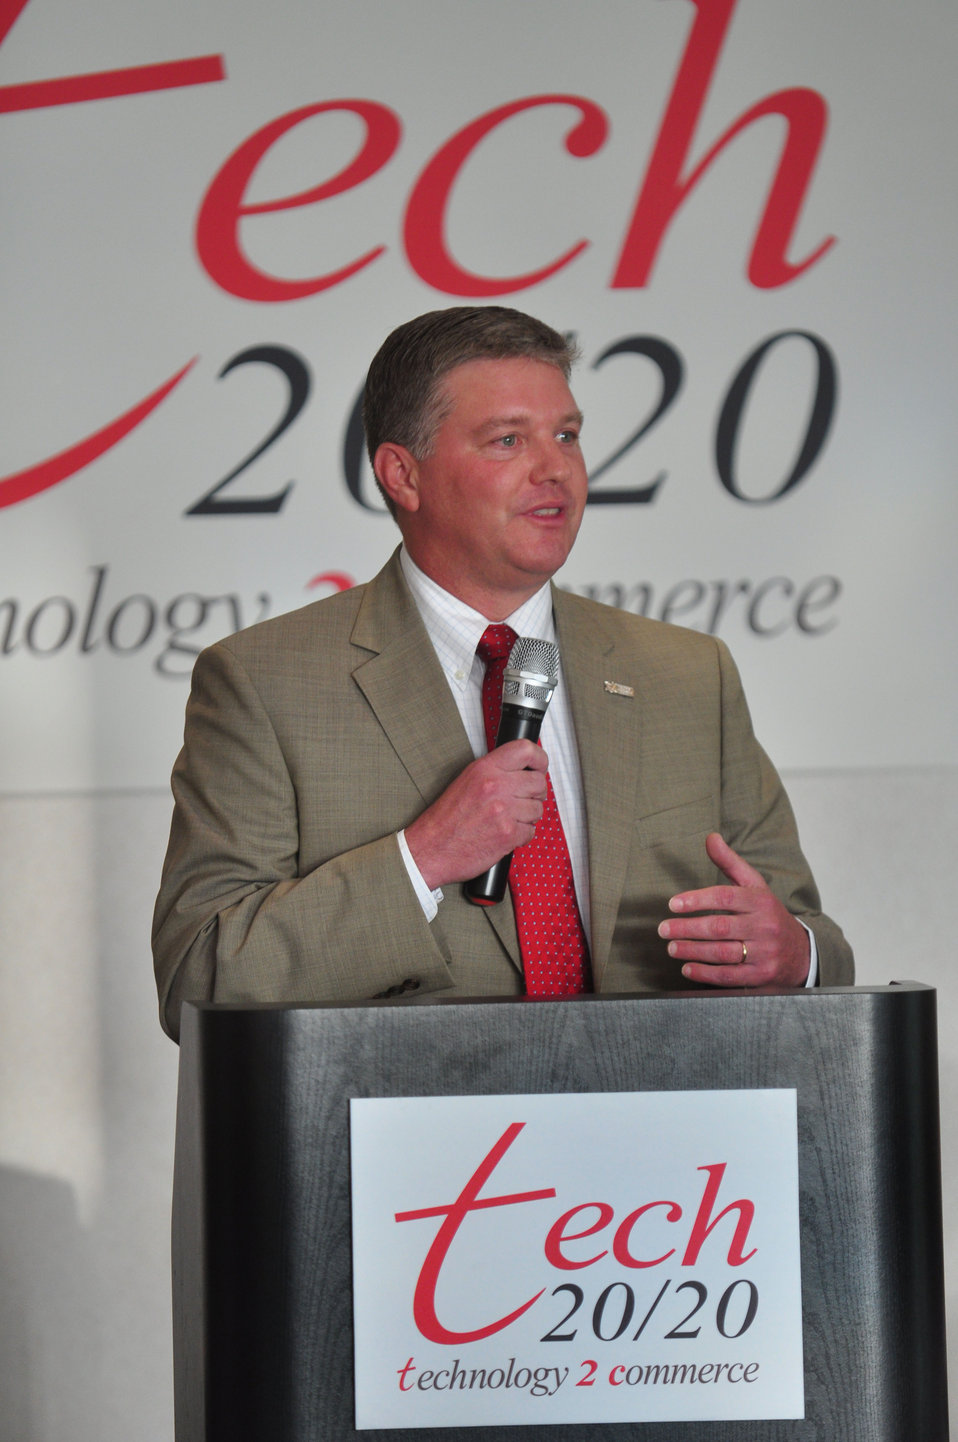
Tennessee Valley Corridor Summit Oak Ridge

13-062 DOE photo Lynn Freeny 5-29-2013 Oak Ridge Tennessee